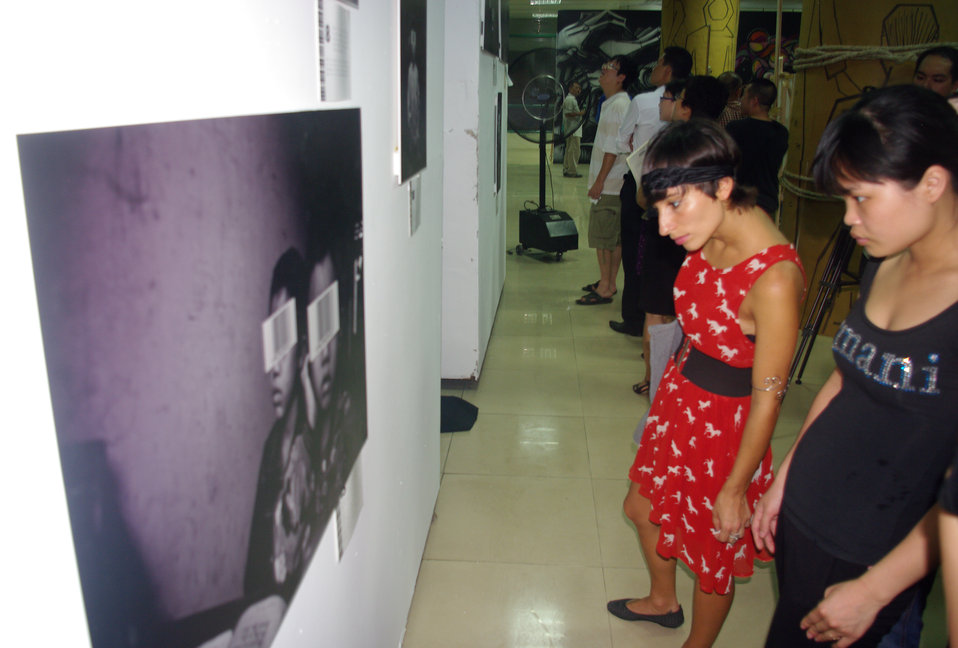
MTV EXIT opens Youth Forum in Hanoi